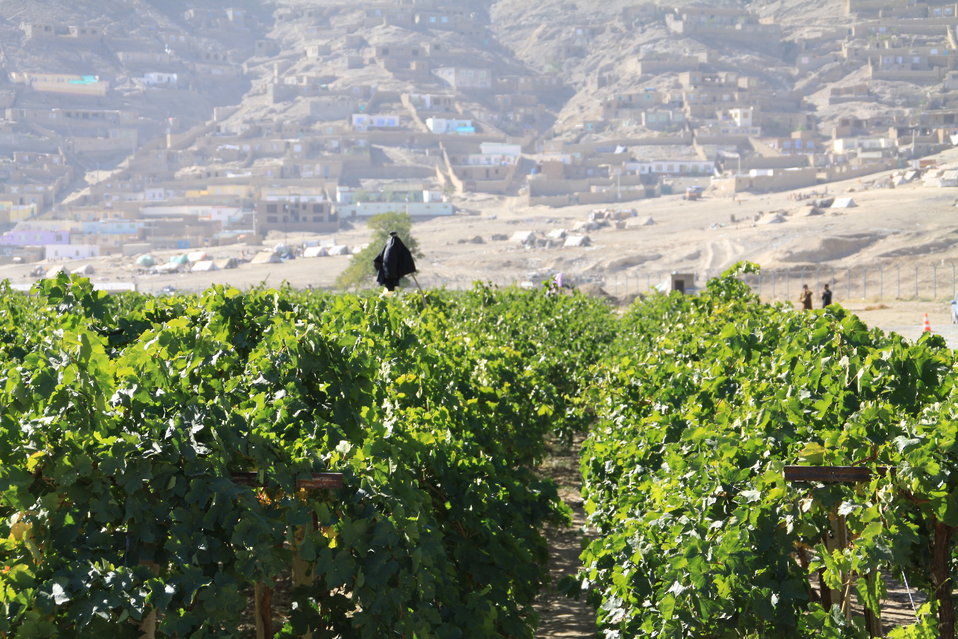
AVIPA Plus Wheat Seed Distribution 101005

US Ambassador Karl Eikenberry and USAID Acting Mission Director Kevin Brownawell joined the Minister of Agriculture, Irrigation and Livestock, H.E. Minister Mohammed Rahimi in signing a Memorandum of Understanding and distributing vouchers to area farmers for wheat and fertilizer.